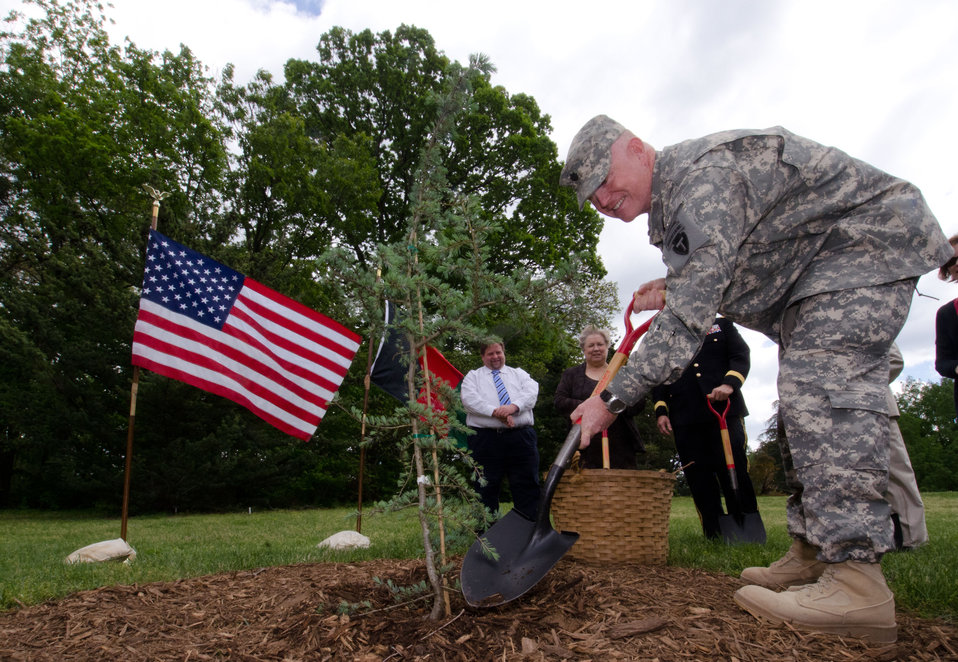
Director of Agribusiness Development Team (ADT) Program, National Guard Bureau Lt. Col. Howard Schauer makes a ceremonial final application of mulch during the Arbor Day tree planting of a Cedrus deodara ('Karl Fuchs') at the National Arboretum. The tree is originally from Pakta Province and the most important tree in Afghanistan for timber.